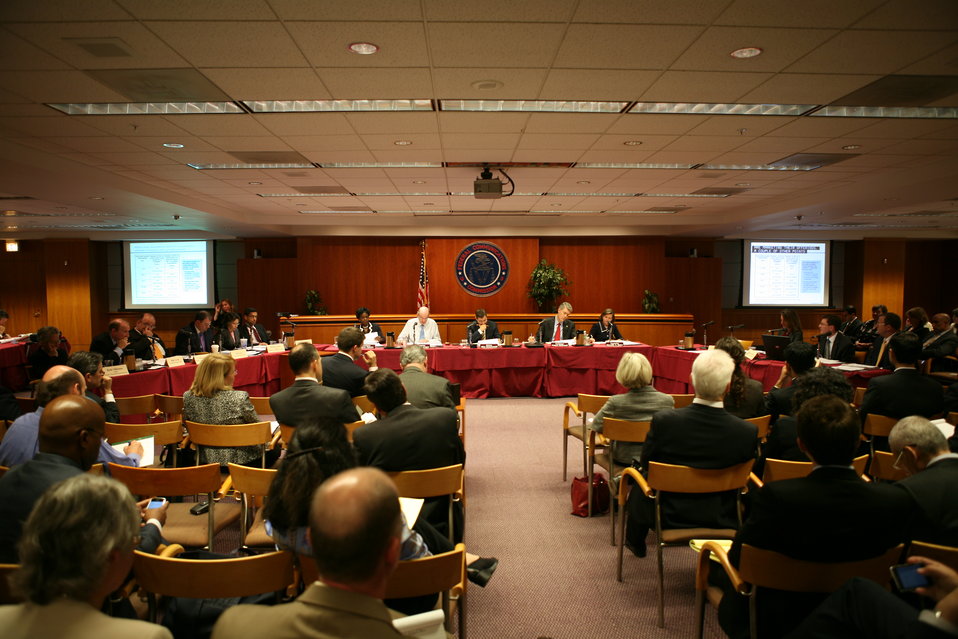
Midterm Review5

Broadband Midterm Review, 9-29-09